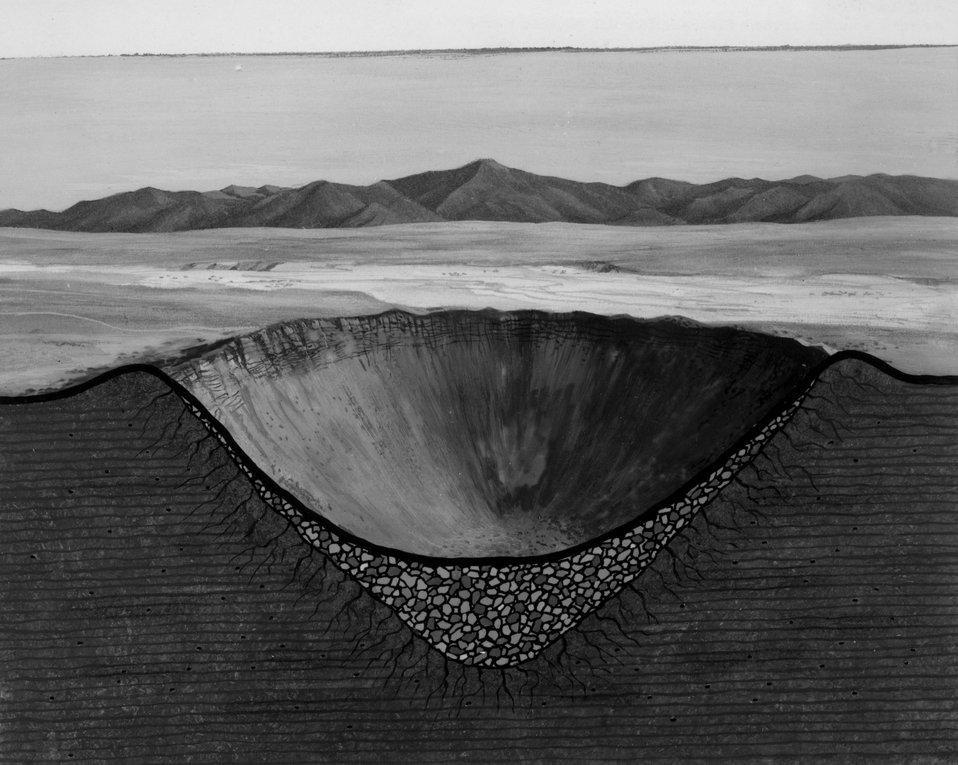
Artist's concept of the cross-section of a nuclear crater showing the broken rock and fractured area below the floor of the crater. c. 1966